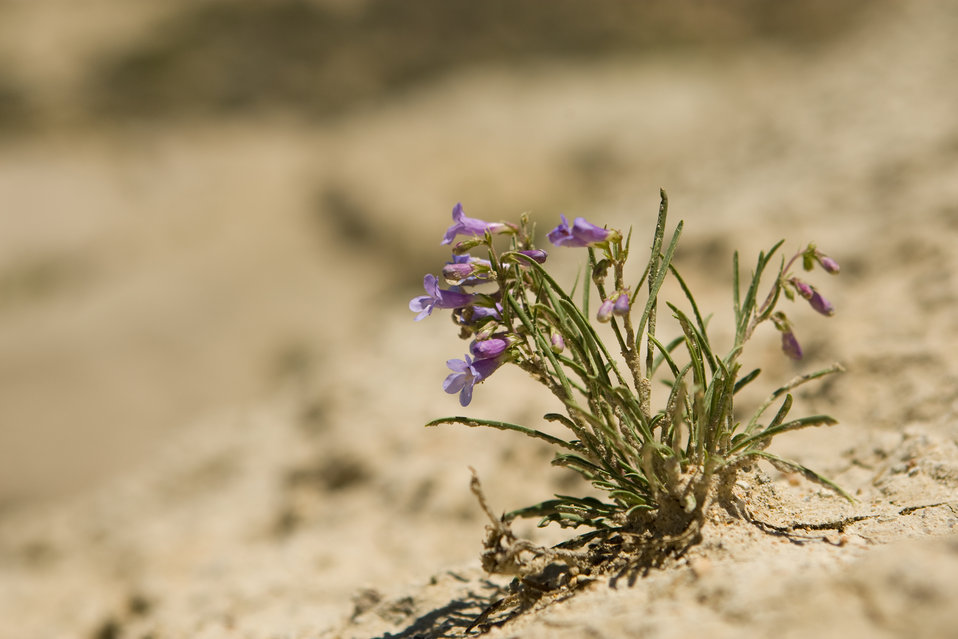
Colorado Rare Plant Conservation Initiative

The Colorado Rare Plant Conservation Initiative (RPCI) is a partnership of 23 statewide and regional agencies, private organizations, and academic institutions working to conserve 121 rare plants in Colorado. As part of these efforts the group developed the Colorado Rare Plant Conservation Strategy, developed Best Management Practices to reduce energy development impacts, addressed climate change, and developed focused strategies for the conservation of individual species at eight priority landscapes. The group has also worked to coordinate volunteer efforts for plant conservation across the state.